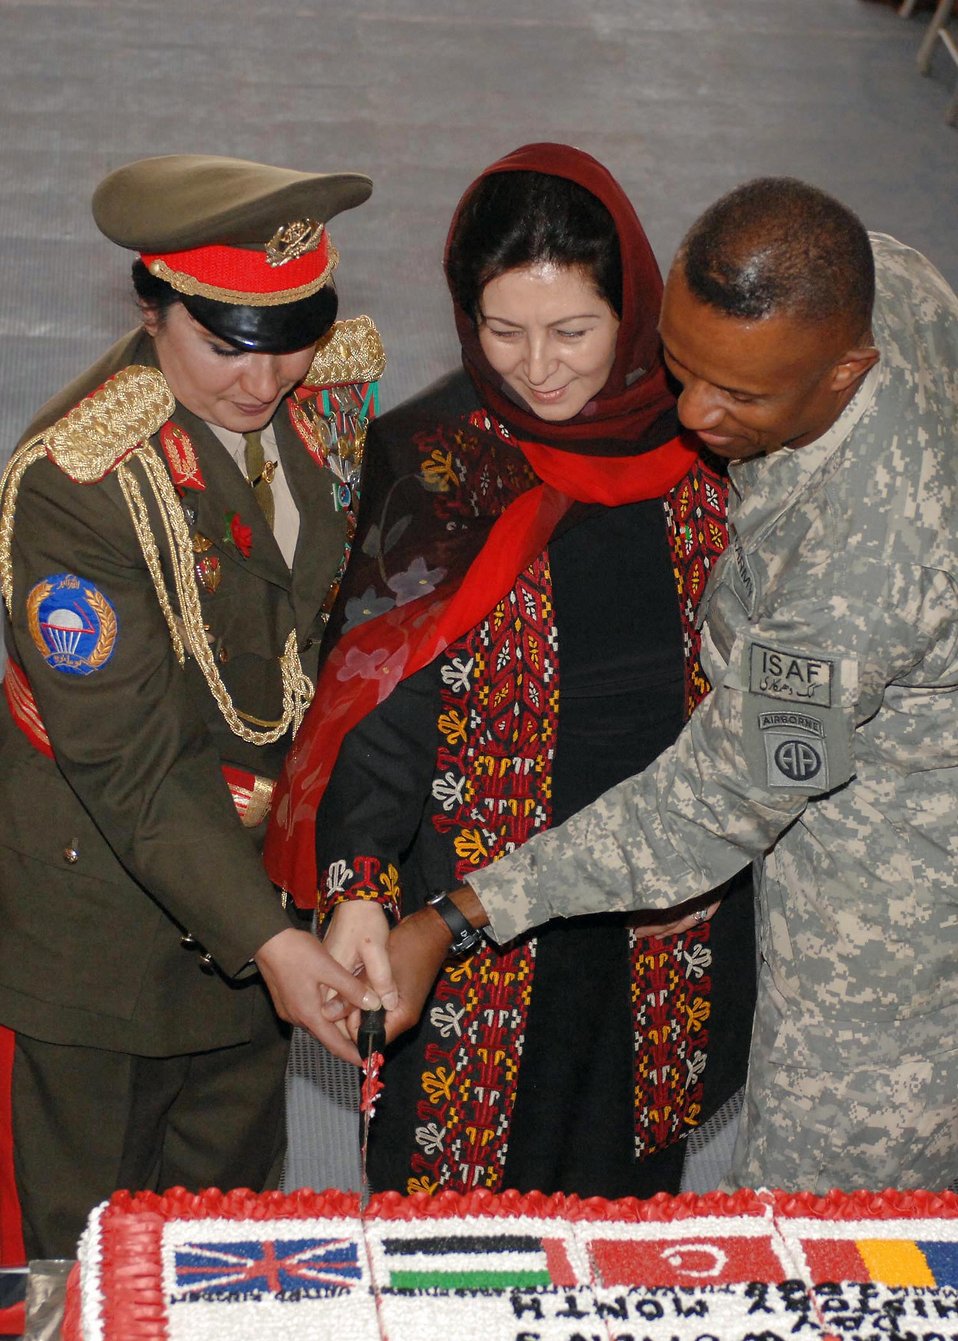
Bagram hosts International Women's Day

Afghan national army Brig. Gen. Khatool Mohammadzai, Afghan Ministry of Women's Affairs Dr. Husn Banu Ghazanfar and Army Brig. Gen. Rodney Anderson cut a cake at an International Women's Day celebration March 3 at Bagram Air Base, Afghanistan. Hundreds turned out to the festivities and celebrated the world's women and acknowledged women's contributions to peace and security. General Anderson is the Combined Joint Task Force-82 deputy commanding general-support.